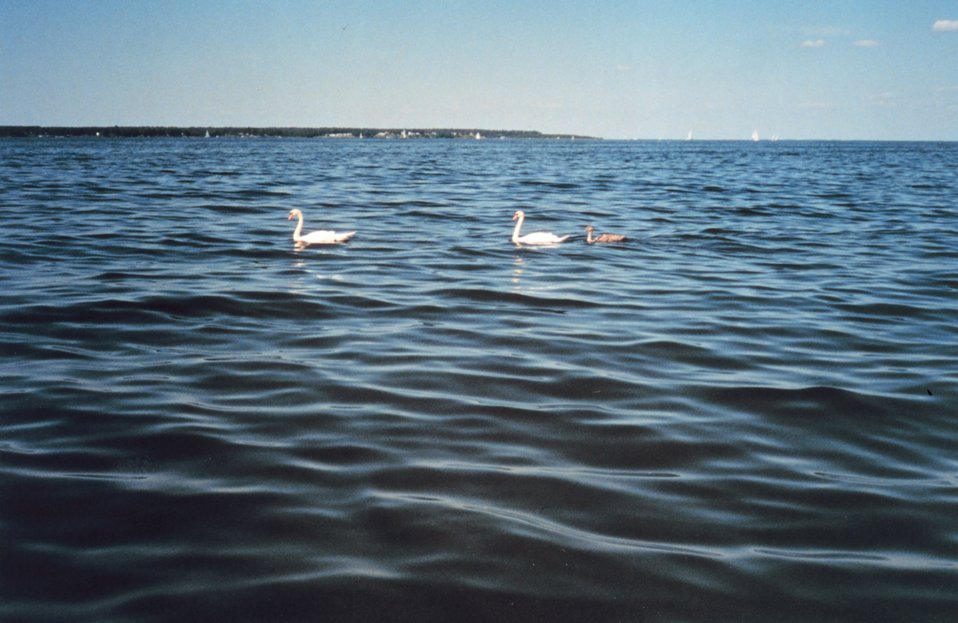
Pair of mute swans with cygnet following. Mute swans are an agressive invasive species along the East Coast. There are now over 3,000 mute swans in the Maryland portion of the Chesapeake Bay.